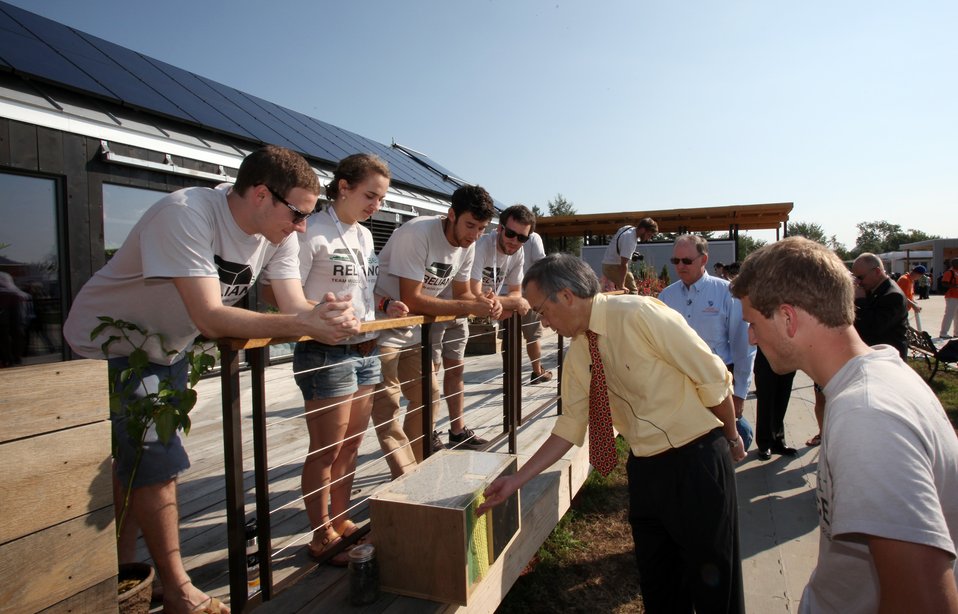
Energy Secretary Chu Visits Middlebury College's Solar Decathlon House

U.S. Energy Secretary Steven Chu speaks with students from Middlebury College as they give him a tour of their entry in the U.S. Department of Energy Solar Decathlon 2011 in Washington, D.C., Friday, Sept. 30, 2011.